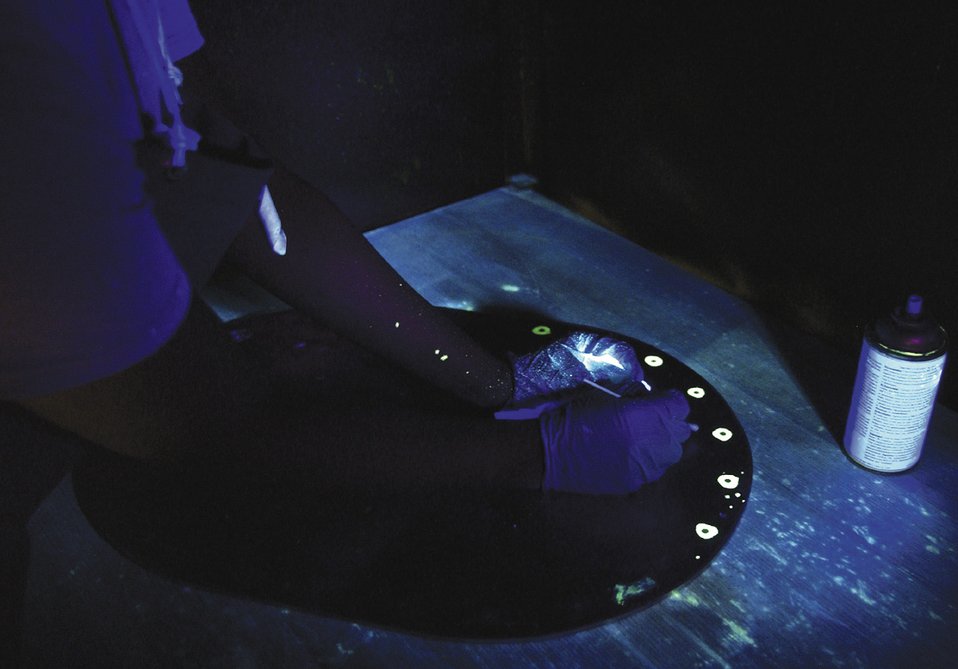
NDI Airmen play big part in mission

SOUTHWEST ASIA - Nondestructive inspection specialists use fluorescent paint and black lights in a darkroom lab to inspect aircraft parts at a forward-deployed location.